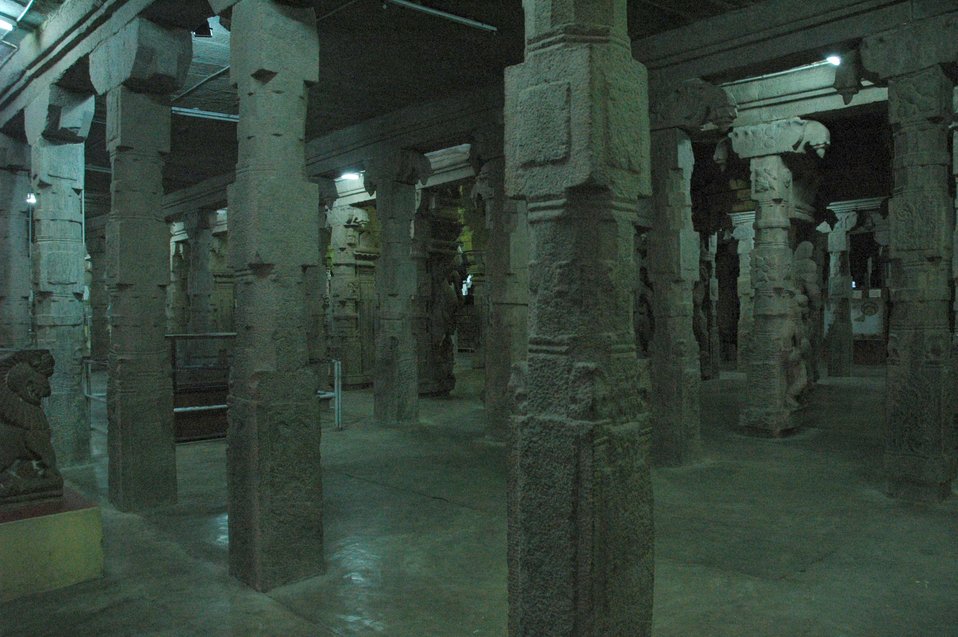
1000 Pillar Hall